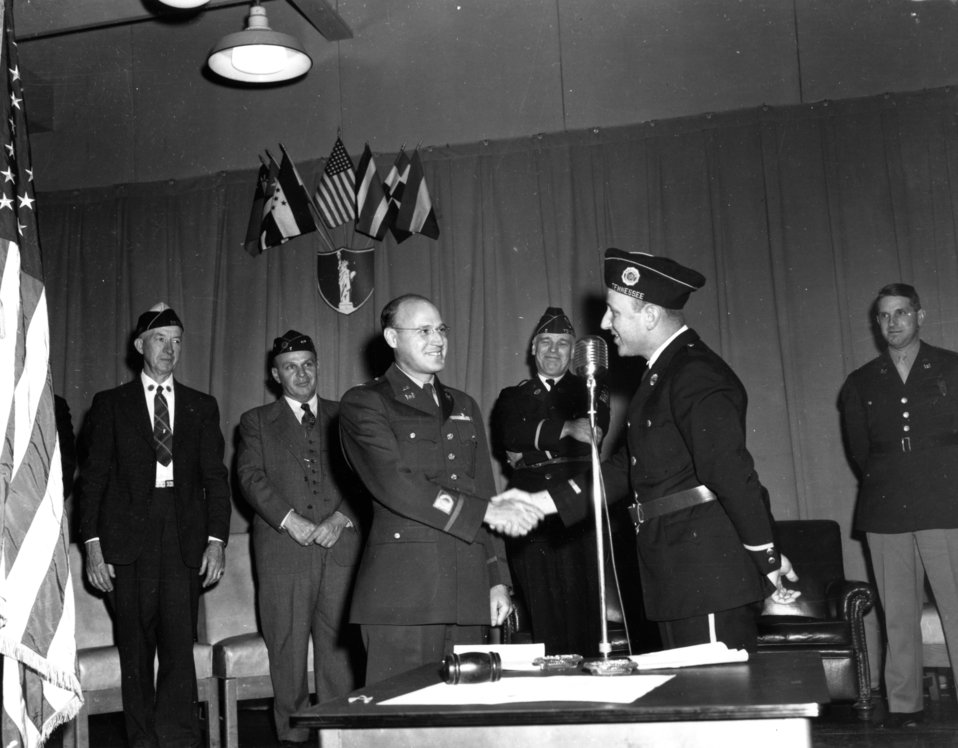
Army Activity at Oak Ridge